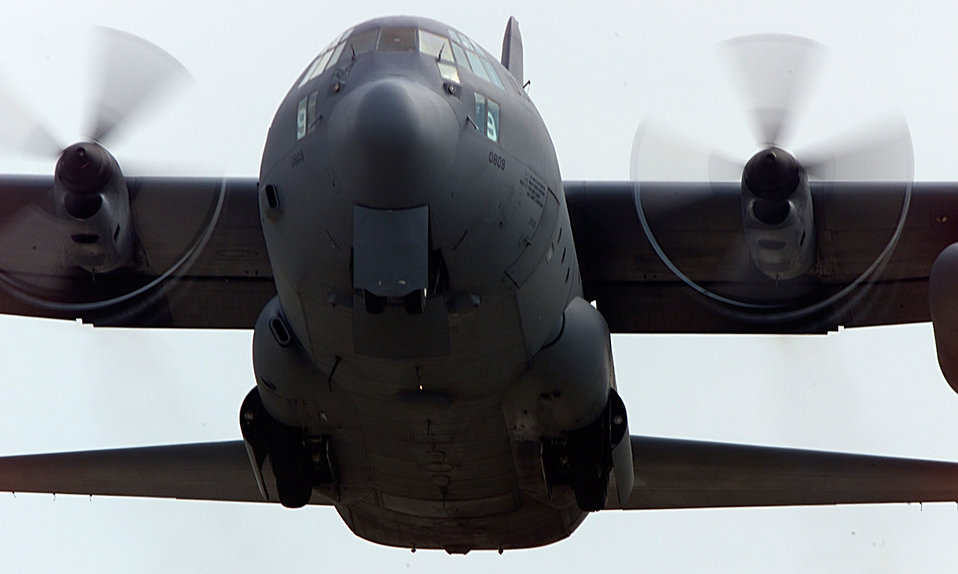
Rodeo 2000

POPE AIR FORCE BASE, N.C. -- A C-130 Hercules takes off May 9, 2000. The C-130 and it's crew are deployed here to participate in Airlift Rodeo 2000. During Rodeo 2000, teams from all over the world compete in areas including airdrop, aerial refueling, aircraft navigation, special tactics, short field landings, cargo loading, engine running on/offloads, aeromedical evacuations and security forces operations.